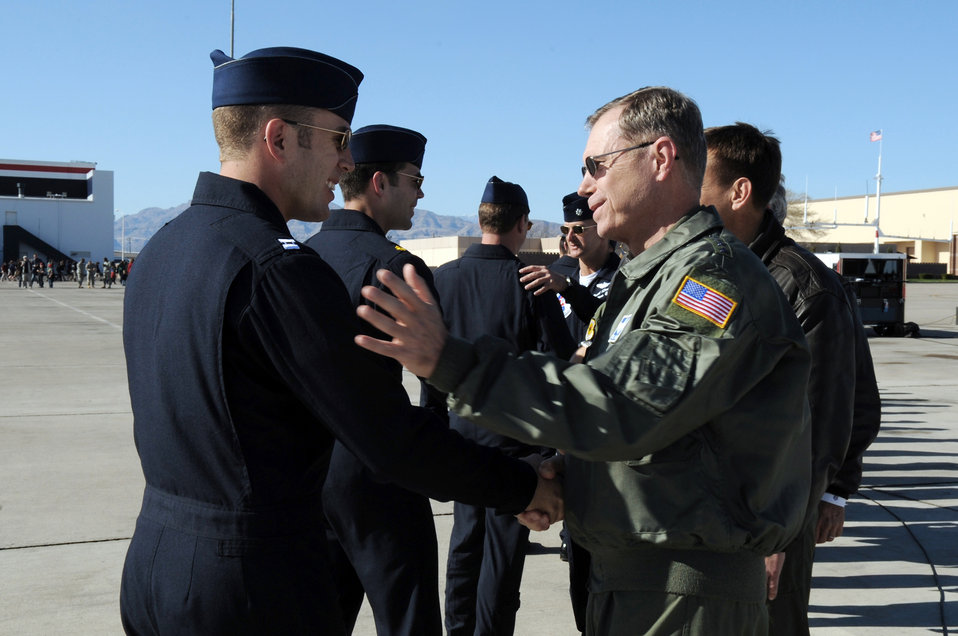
Air Combat Command leader discusses priorities during visit to Nellis

Gen. William M. Fraser III meets Capt. Paul Jelinek following the team's acceptance show March 11, 2010, at Nellis Air Force Base, Nev. General Fraser is the commander of Air Combat Command, and Captain Jelinek is the Air Force Air Demonstration Squadron